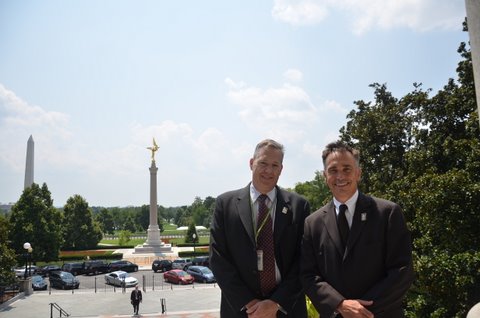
WH 2012 World Hepatitis Day Event